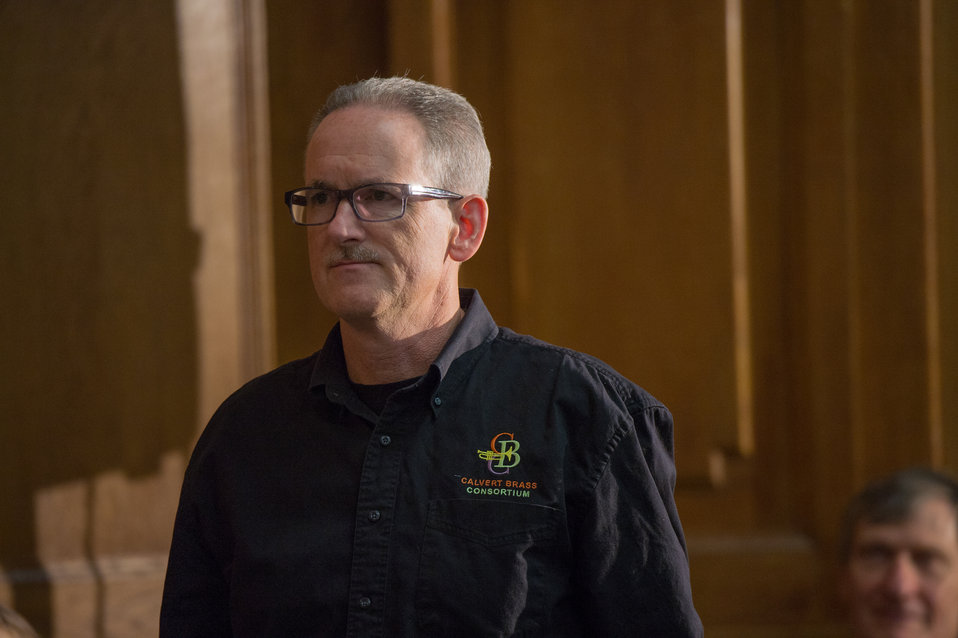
U.S. Department of Agriculture (USDA) personnel who have served, or are serving in a Uniformed Armed Service are called by their past or present Service to stand and be honored with the singing of each of the major Service songs sung by soprano Amy Keesun Kwon, during the 2013 USDA Veterans’ Day Observance, whose theme is “VALOR, COURAGE, SACRIFICE – HONORING ALL WHO SERVED,” in Washington, DC, on Wednesday, November 20, 2013.